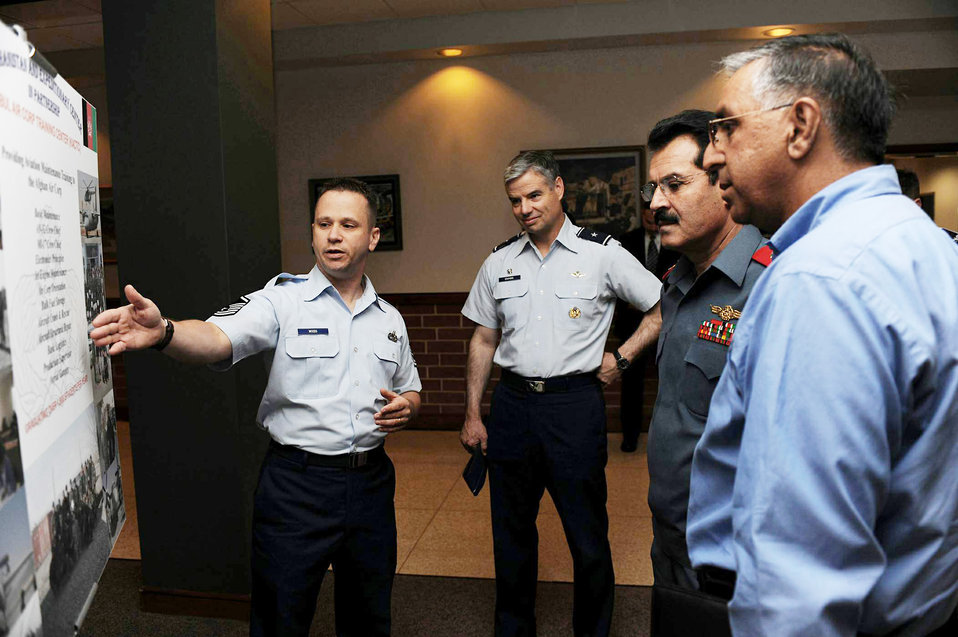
Afghan air corps commander calls Expeditionary Center a 'role model' for training

Master Sgt. Richard Woods (left) explains a storyboard July 13 at the Air Force Expeditionary Center on Joint Base McGuire-Dix-Lakehurst, N.J. The briefing was part of a visit here by Afghan Maj. Gen. Mohammad Dawran, commander of the Afghanistan National Army Air Corps, to learn more about the Air Education and Training Command's Air Adviser Course housed here. Also shown are Brig. Gen Walter Givhan, the Combined Air Power Transition Force commanding general (second from left); and M. Monir Rafiq, a Department of Defense interpreter (far right).